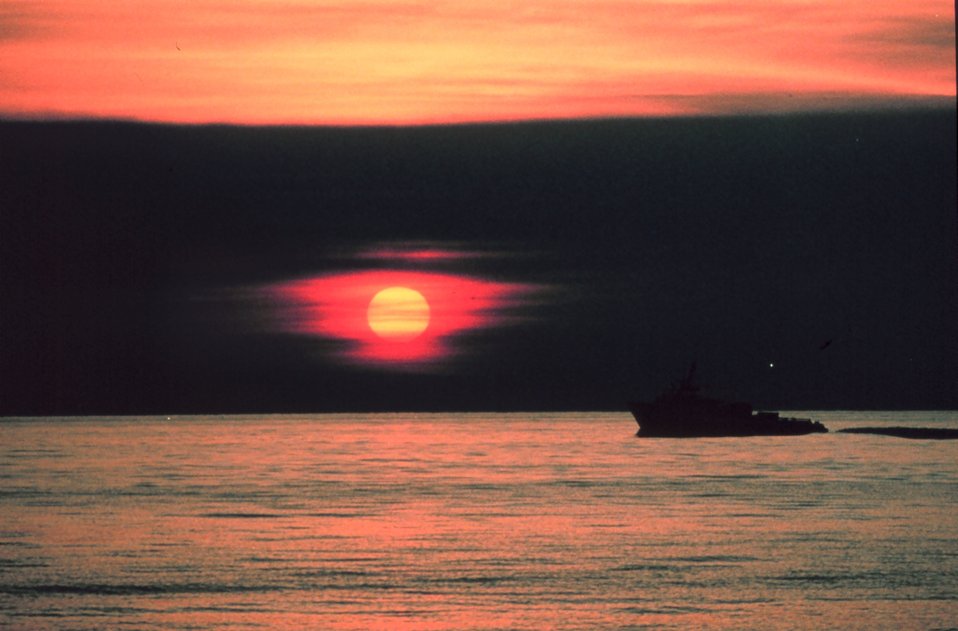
A gulf crew boat silhouetted in a Gulf of Mexico sunset. Offshore of Cameron.